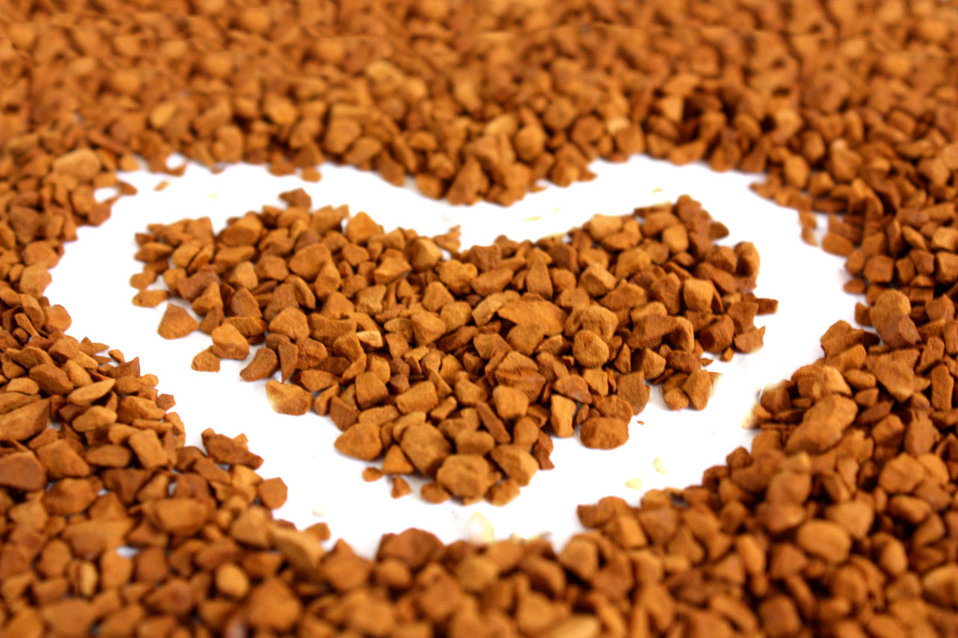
Coffee heart.